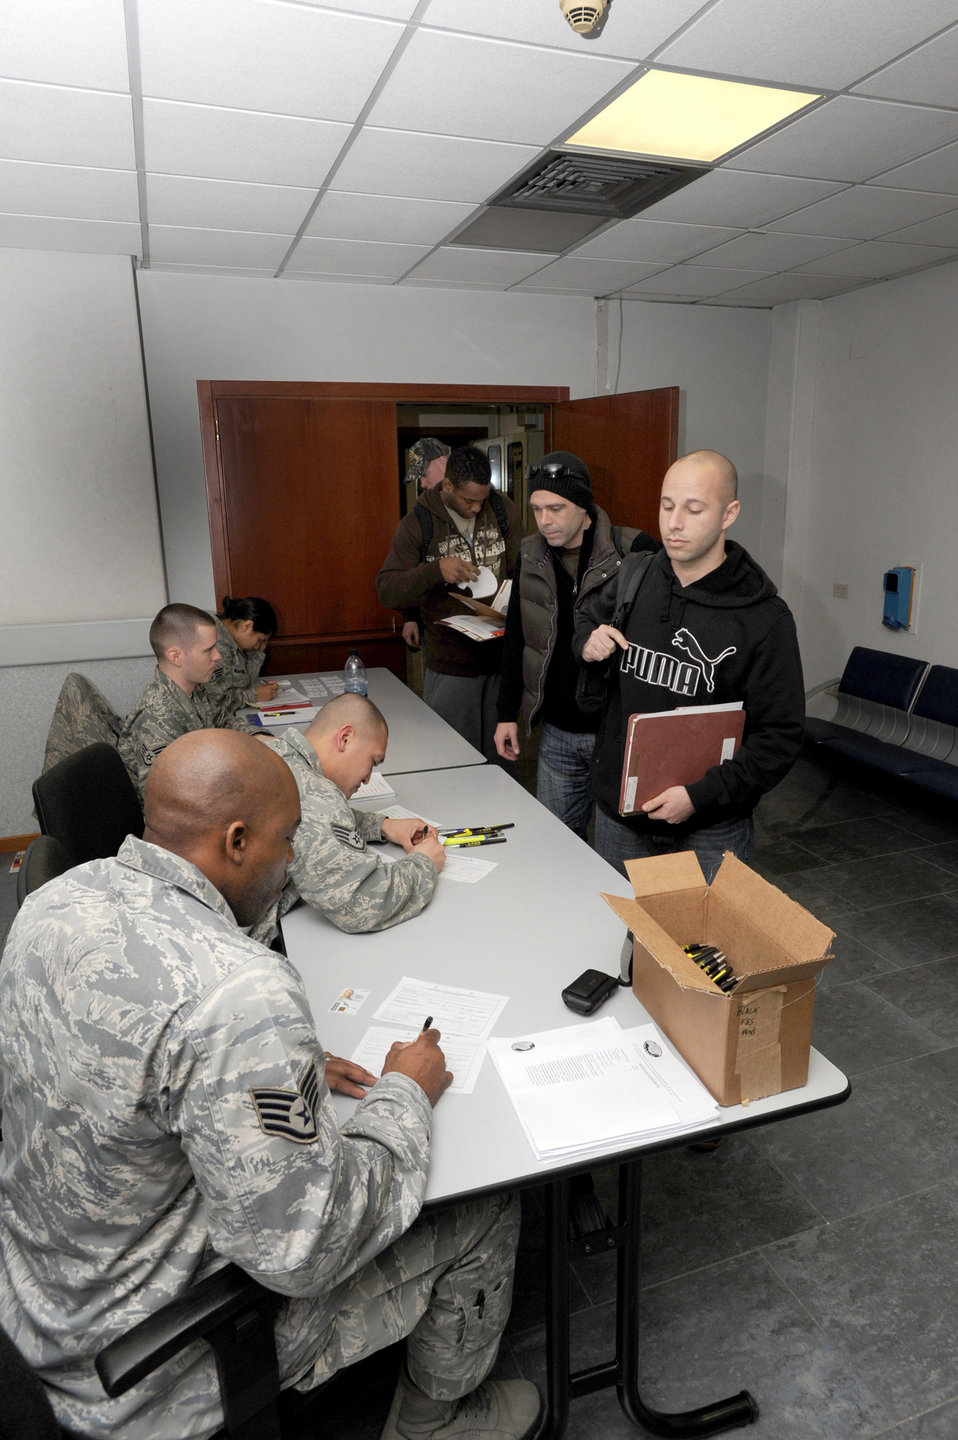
Inprocessing.

Personnel with the 31st Force Support Squadron inprocesses Airmen from Royal Air Force Lakenheath, United Kingdom, March 20, 2011. Joint Task Force Odyssey Dawn is the U.S. Africa Command task force established to support the larger international response to the unrest in Libya. A coalition of nations are partnering to enforce U.N. Security Council Resolution (UNSCR) 1973, which authorizes all necessary means to protect civilians in Libya under threat of attack by Qadhafi regime forces. JTF Odyssey Dawn is commanded by Admiral Samuel J. Locklear, III.